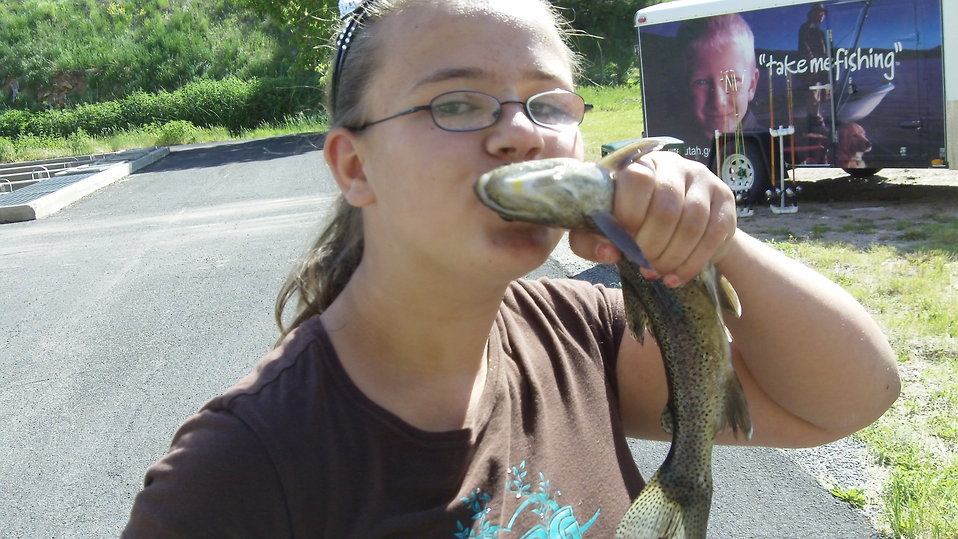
Fishing Day Participant Kisses a Fish

On June 11, 2011, Jones Holes National Fish Hatchery held its annual Kids Free Fishing Day. Families came out to enjoy the great outdoors. Everyone had a chance to tour the hatchery, feed fish and hook the 'big' one. Girls and boys learned it is not bad to touch a worm or hold a fish. Project Leader 'Kip Bottomley' was a leader that day in showing children how to catch and release fish. Staff, Travis Anderson and Michelle Pagliasotti also assisted in making the day a fun experience for who attended. UT Division of Wildlife Resources also help in the event.